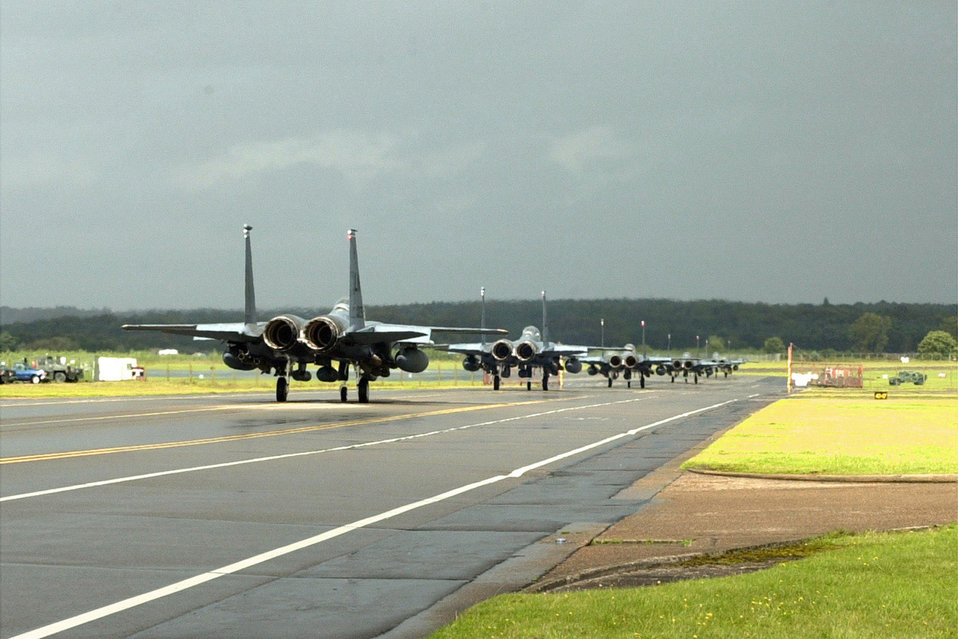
Strike Eagle Takeoff

OPERAION ENDURING FREEDOM -- F-15E Strike Eagles from Royal Air Force Lakenheath, England, line up on the taxiway preparing for takeoff for a mission supporting of Operation Enduring Freedom.